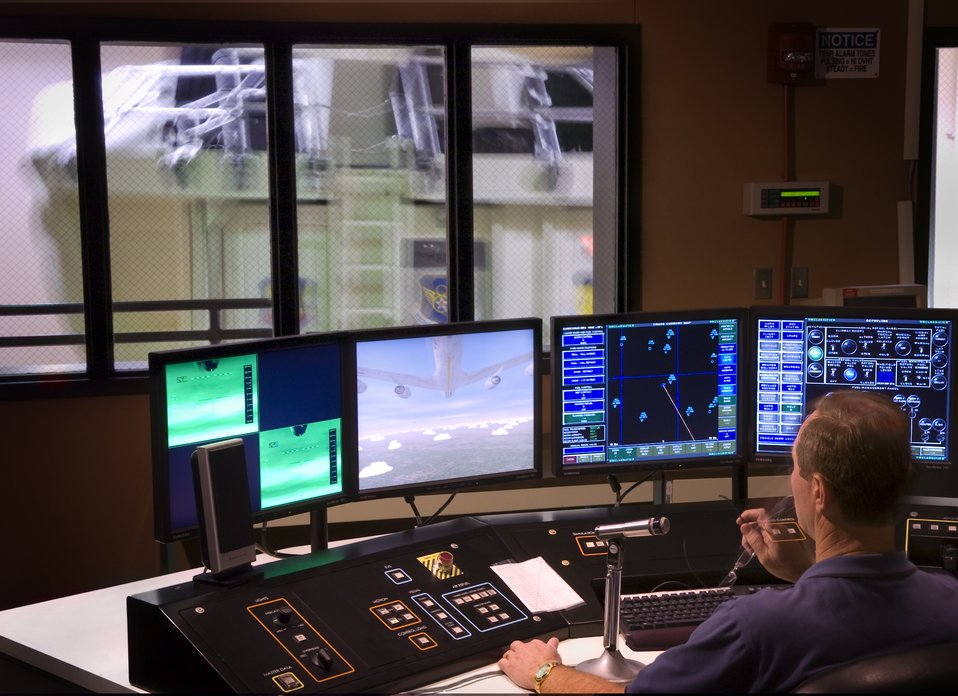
B-52 bomber and simulator

Richard Thomas manages the training inputs for a B-52 Stratofortress simulator April 28 at Barksdale Air Force Base, La. Using a simulator to training aircrews on the complicated B-52 air-refueling mission is safer and more cost effective than during actual flights.